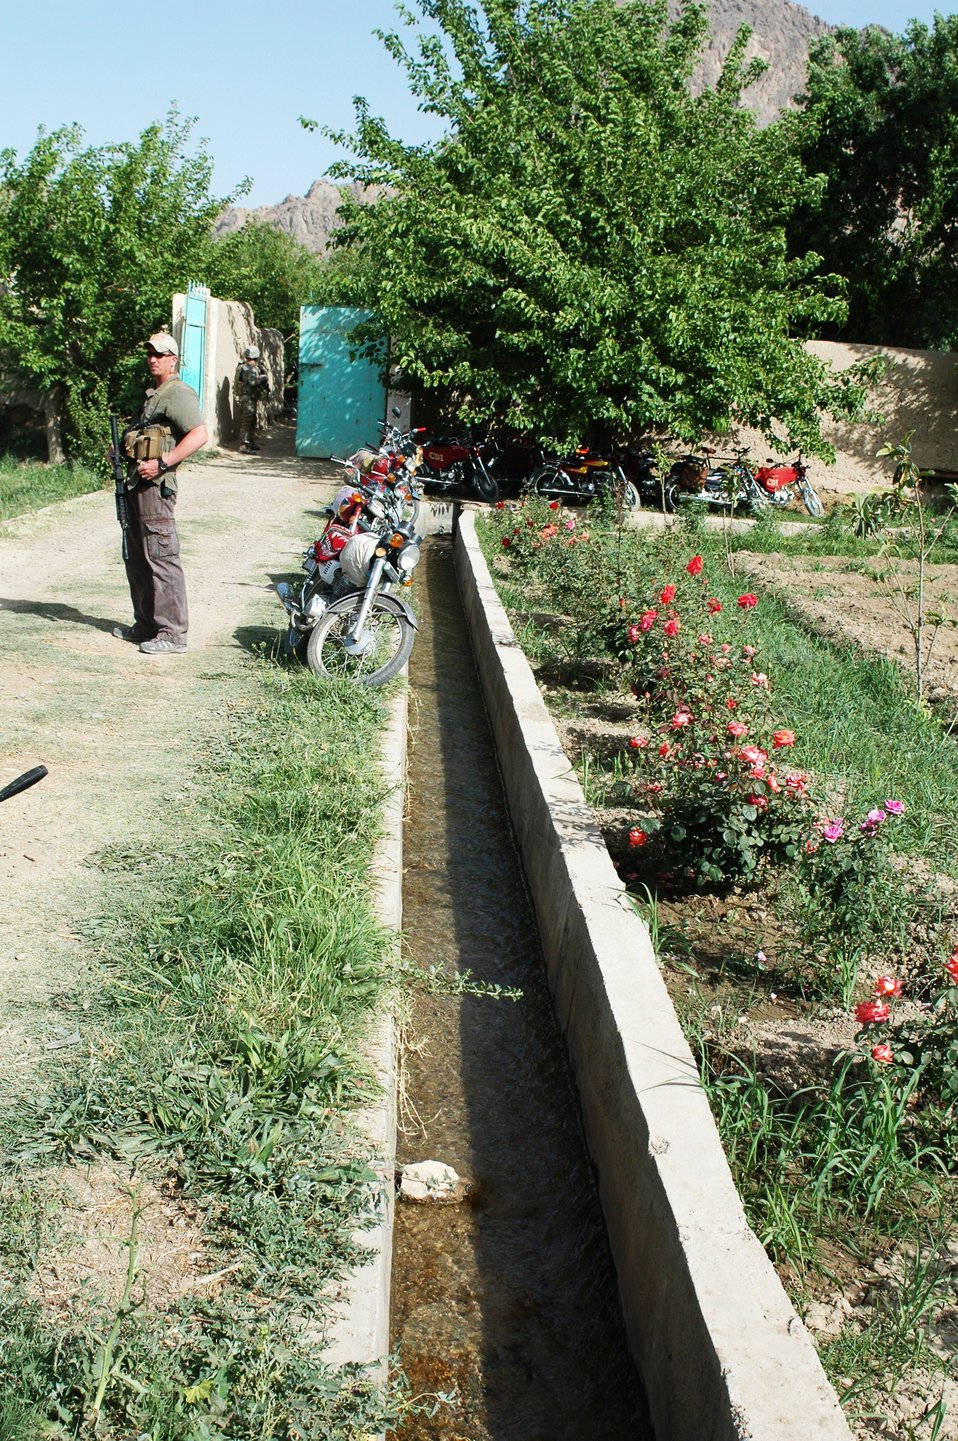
Dr Shah Visits Argandab April 10, 2010